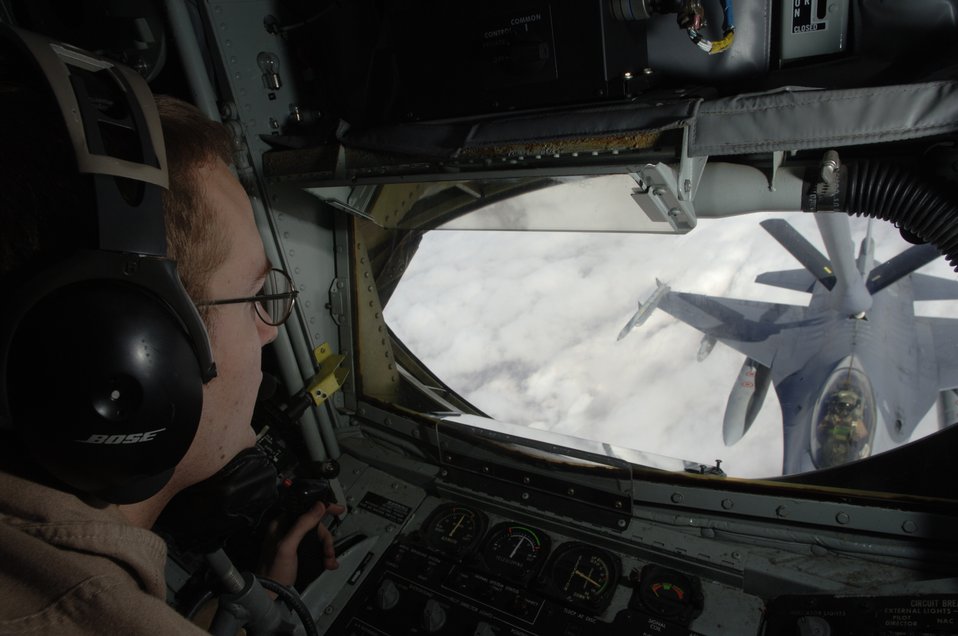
Boom uses steady hand to keep aircraft fighting

Senior Airman Jered Danielson refuels an F-16 Fighting Falcon from the KC-135R Stratotanker. As a boom operator, he helps extend the capability and range of all the aircraft he refuels. Airman Danielson is an in-flight refueling journeyman assigned to the 340th Expeditionary Air Refueling Squadron. He is deployed to Southwest Asia from the 911th Air Refueling Squadron at Grand Forks Air Force Base, N.D. The F-16 is deployed from Cannon AFB, N.M.